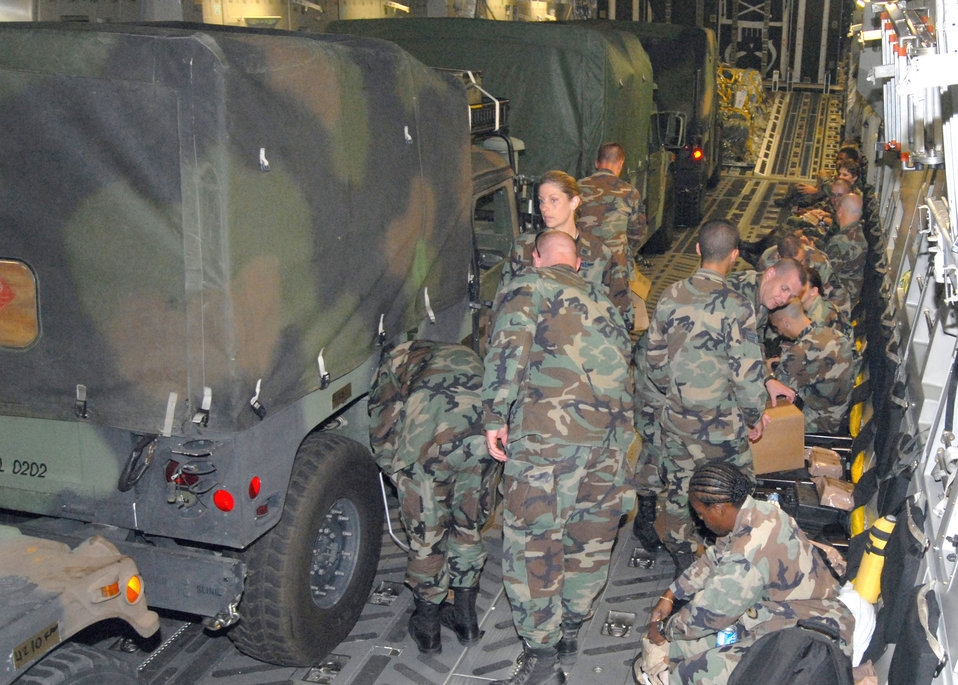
Pope aerovac squadron deploys for Hurricane Dean

Members of the 43rd Aeromedical Evacuation Squadron at Pope Air Force Base, N.C., settle in on a C-17 Globemaster III for the trip to Brownsville, Texas, Aug. 19. Approximately 40 flight nurses, flight medics and support personnel deployed to set up a Mobile Aeromedical Staging Facility in preparation for Hurricane Dean relief efforts.